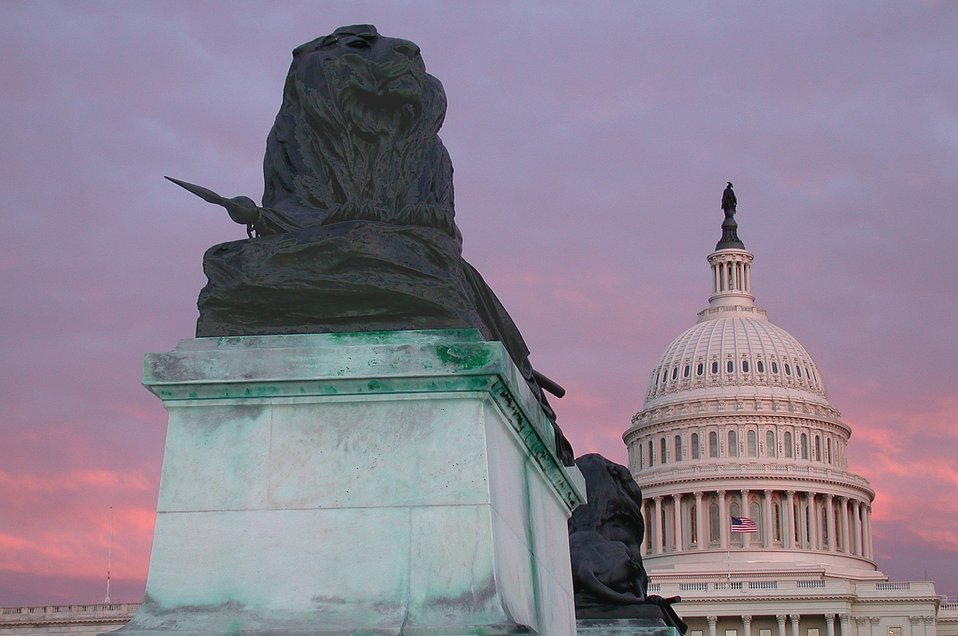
United States Capitol building.